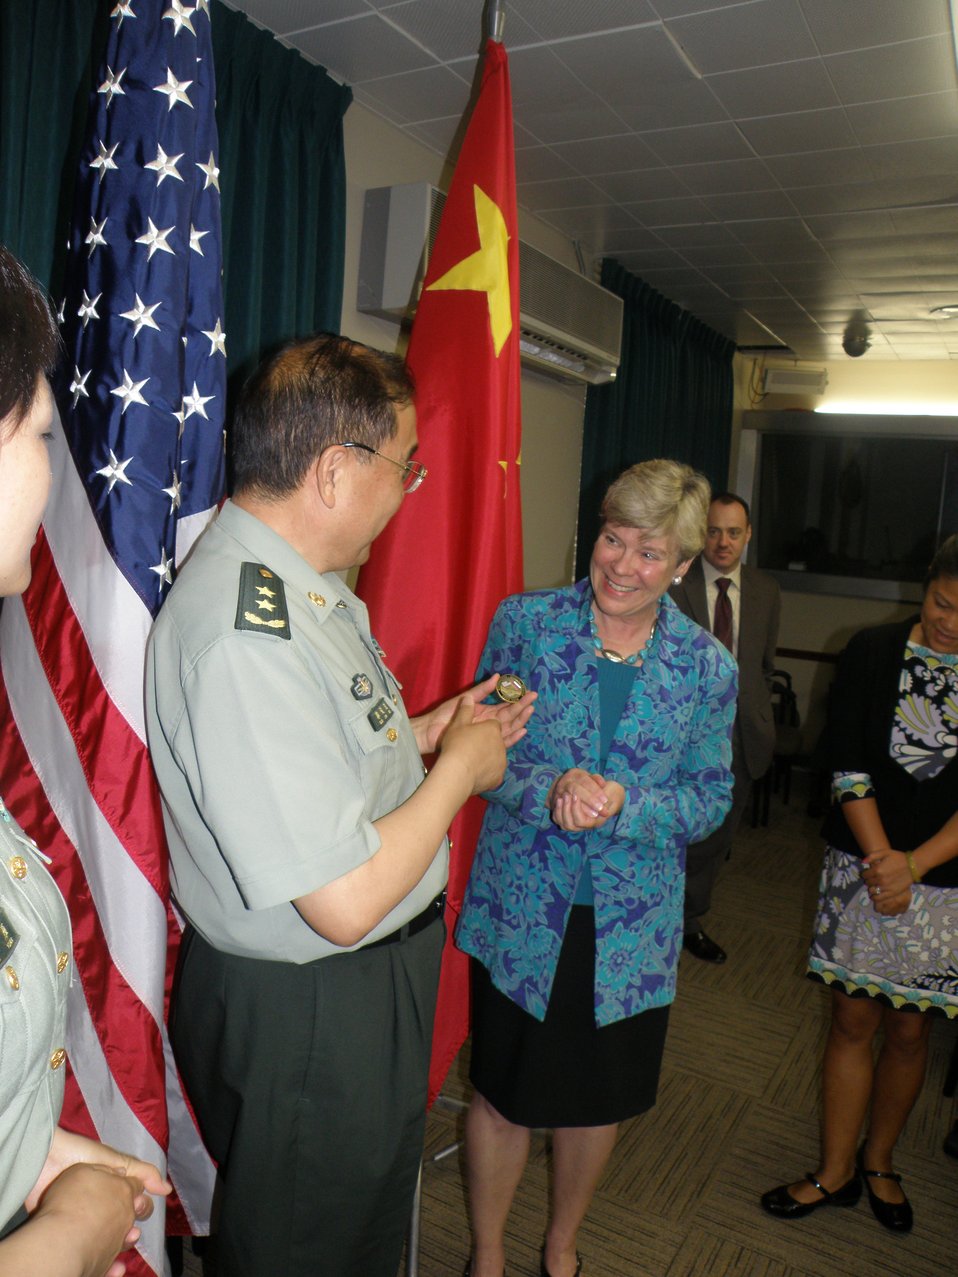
Assistant Secretary Gottemoeller Meets With Chinese Senior Military Officers

Assistant Secretary of State for Arms Control, Verification and Compliance Rose Gottemoeller meets with a group of visiting senior military officers from China, at the U.S. Department of State in Washington, D.C., on June 16, 2011.